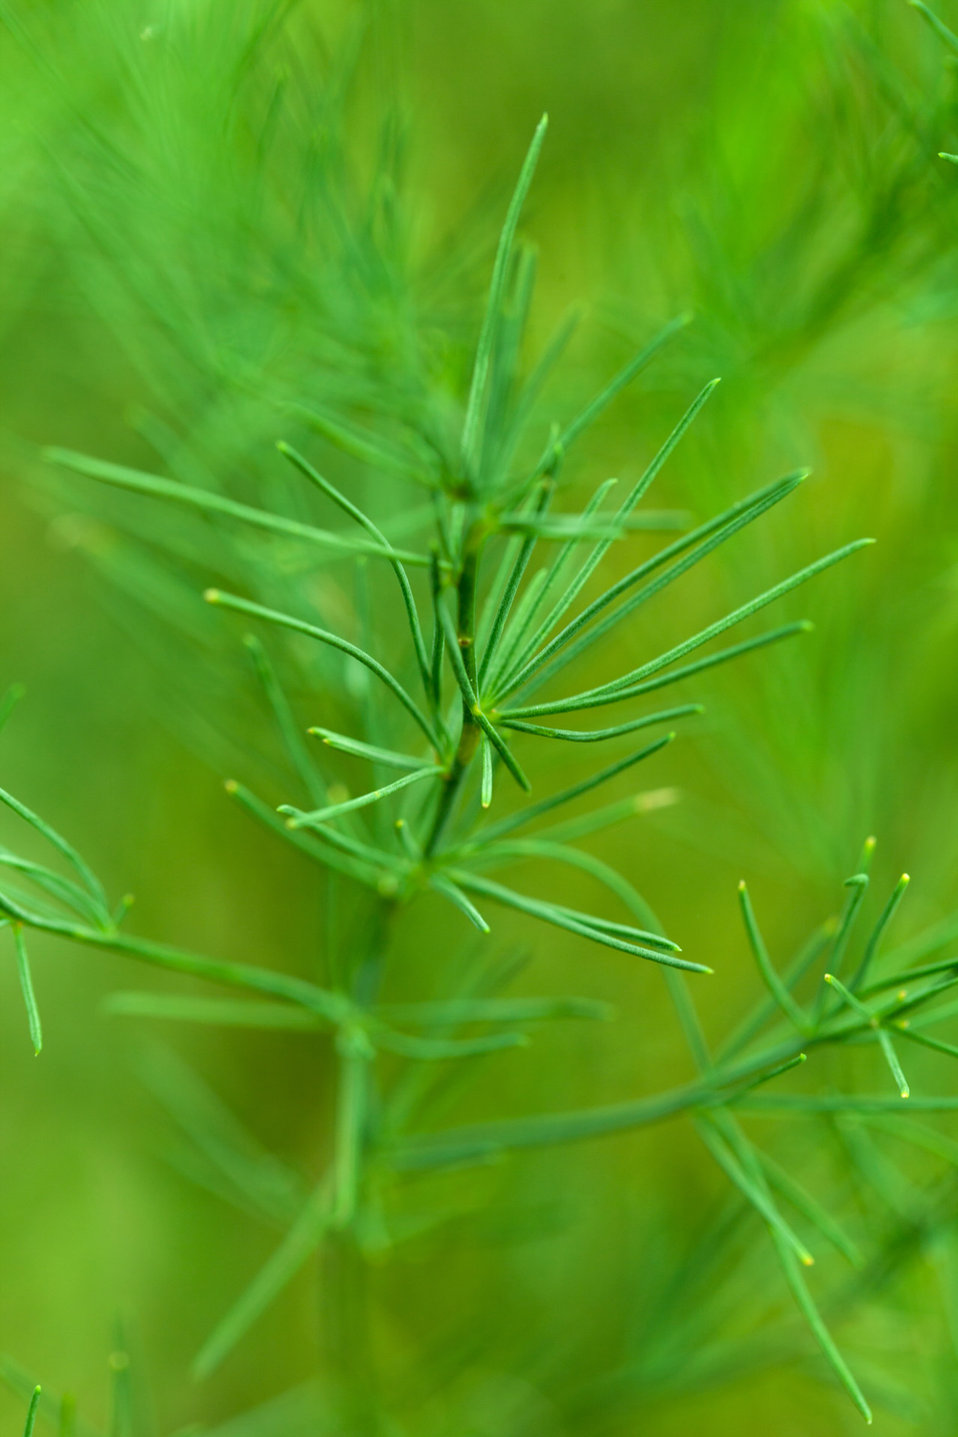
Green dill

Macro photo of a green dill.